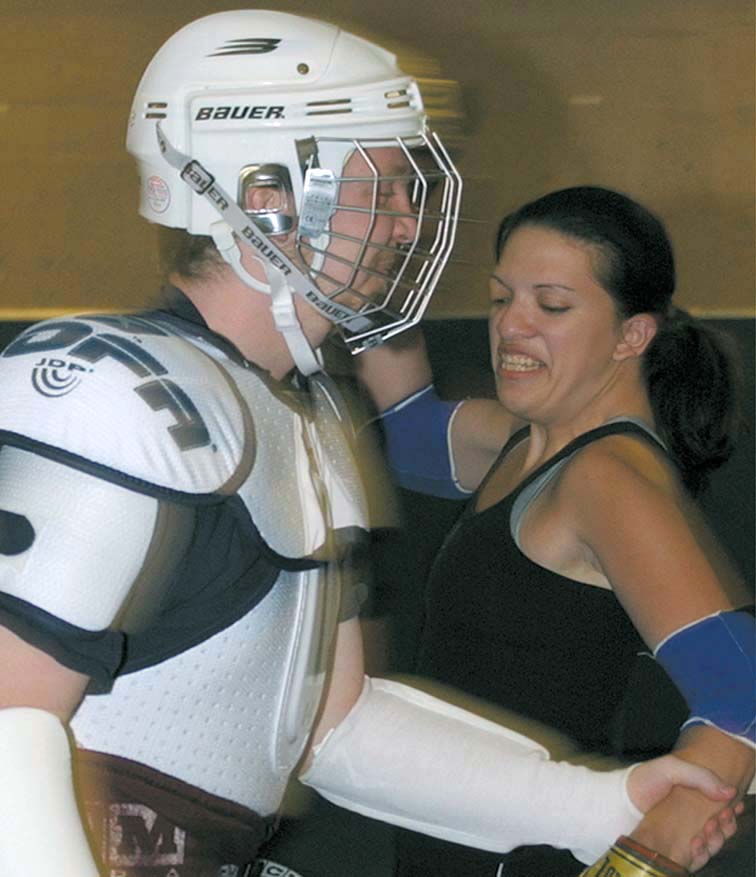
Course offers self-defense training

MINOT STATE UNIVERSITY, N.D. -- Airman 1st Class Irene Maxwell is